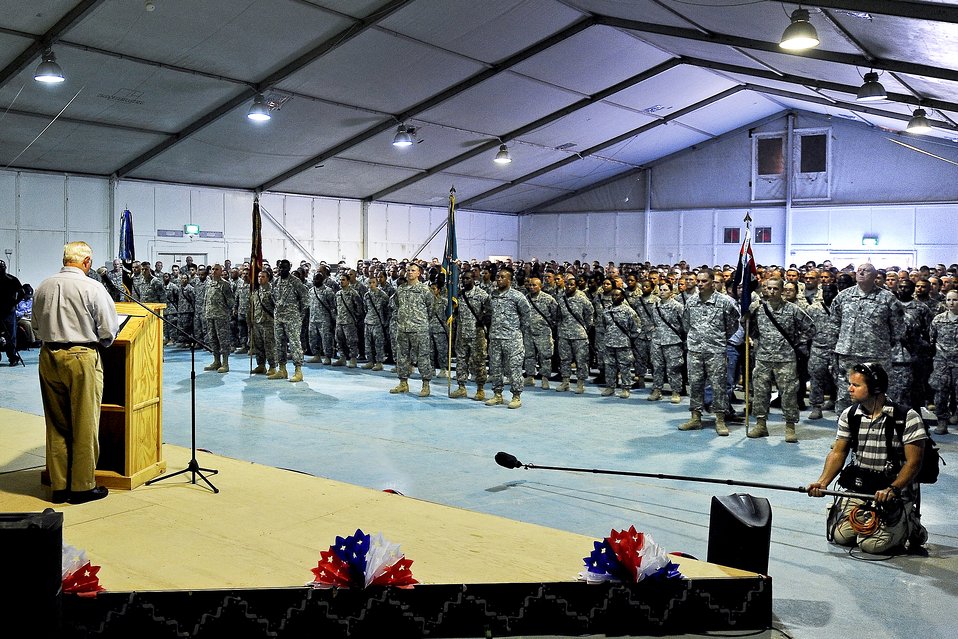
Secretary of Defense visits Iraq

Secretary of Defense Robert M. Gates talks with troops and invites questions in Ramadi, Iraq, Sept.1, 2010. Secretary Gates was visiting Iraq to mark the end of U.S. combat operations in the country.